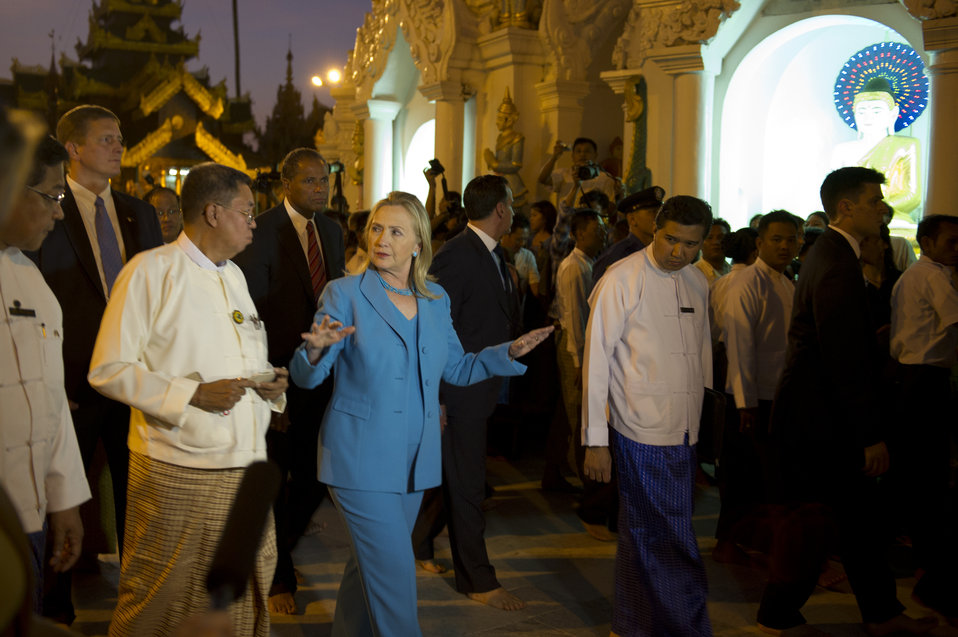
Secretary Clinton Visits the Shwedagon Pagoda

U.S. Secretary of State Hillary Rodham Clinton visits the Shwedagon Pagoda in Rangoon, Burma, on December 1, 2011.